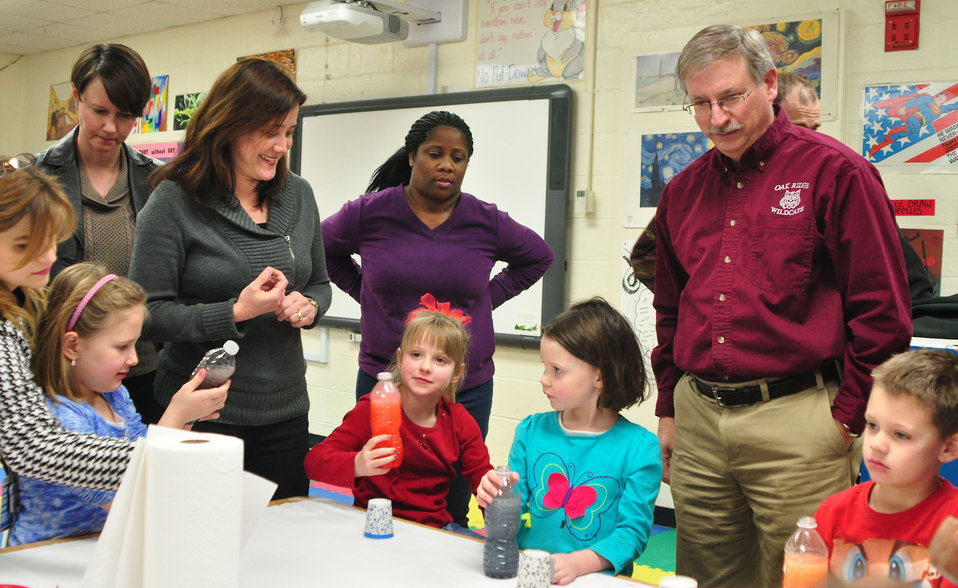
Woodland School STEM Night Oak Ridge 2014

14-013 DOE photo Lynn Freeny 1-23-2014 Oak Ridge Tennessee